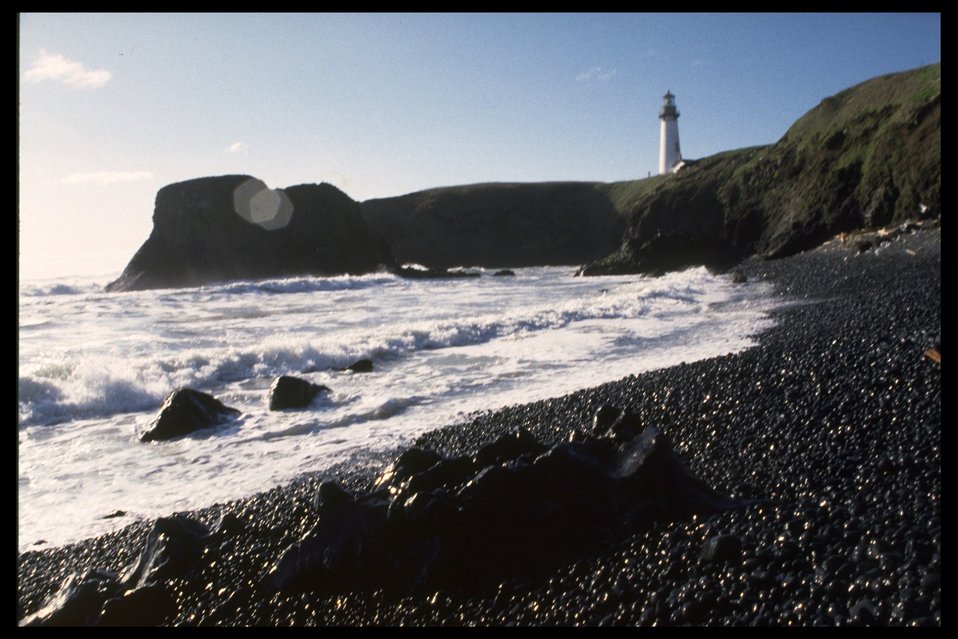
Yaquina Head Lighthouse.